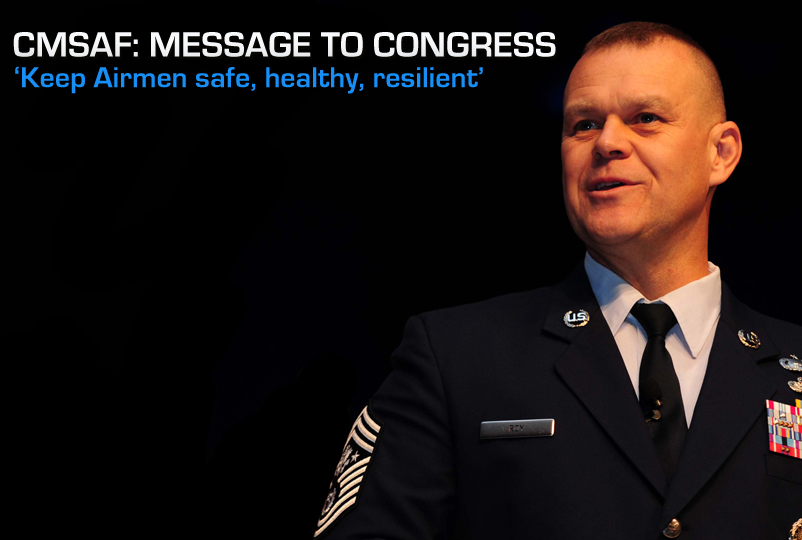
CMSAF testifies before Congress